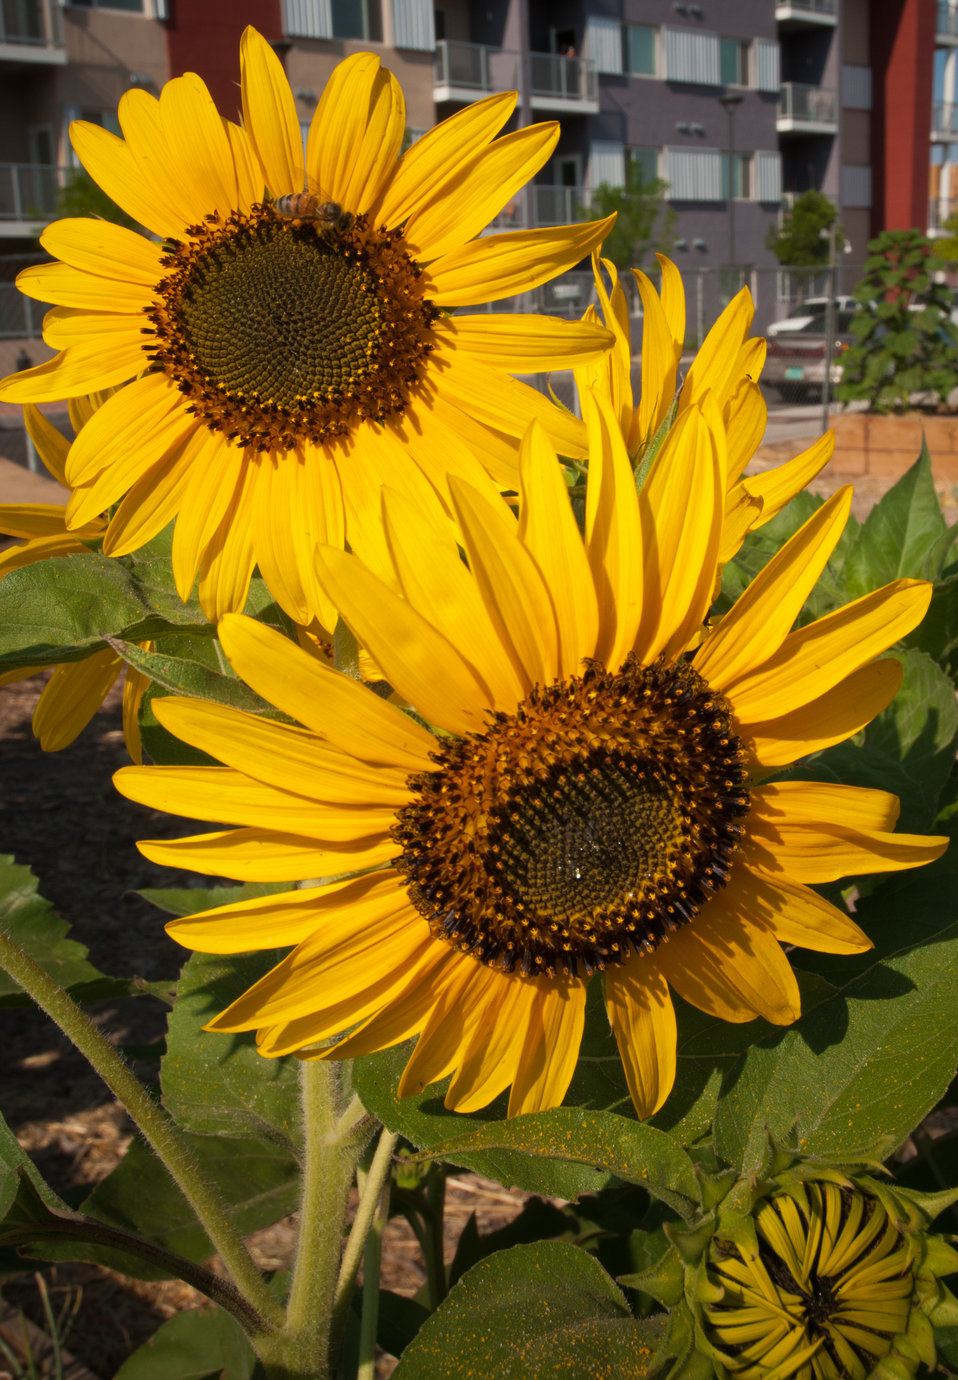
The La Montanita Co-op Veteran Farm Project (VFP) funded through the U.S. Department of Agriculture's (USDA) Agricultural Marketing Service (AMS) Specialty Crop Grant program provides veterans workshops on sustainable farming practices, hands-on gardening and farming experience. This collaboration between La Montanita Co-op, Downtown Action Team, the Veteran’s Administration, the New Mexico Department of Agriculture and Holistic Management International provides the initial training for veterans to start or work at sustainable agriculture businesses. VFP grows produce at their Alvarado Urban Farm in Albuquerque, NM year round. The VFP gardens will supply a stand at the Veteran Affairs (VA) Farmers’ Market once a week over the summer, feed project participants and fill Community Supported Agriculture (CSA) boxes for low-income families in Albuquerque, New Mexico.